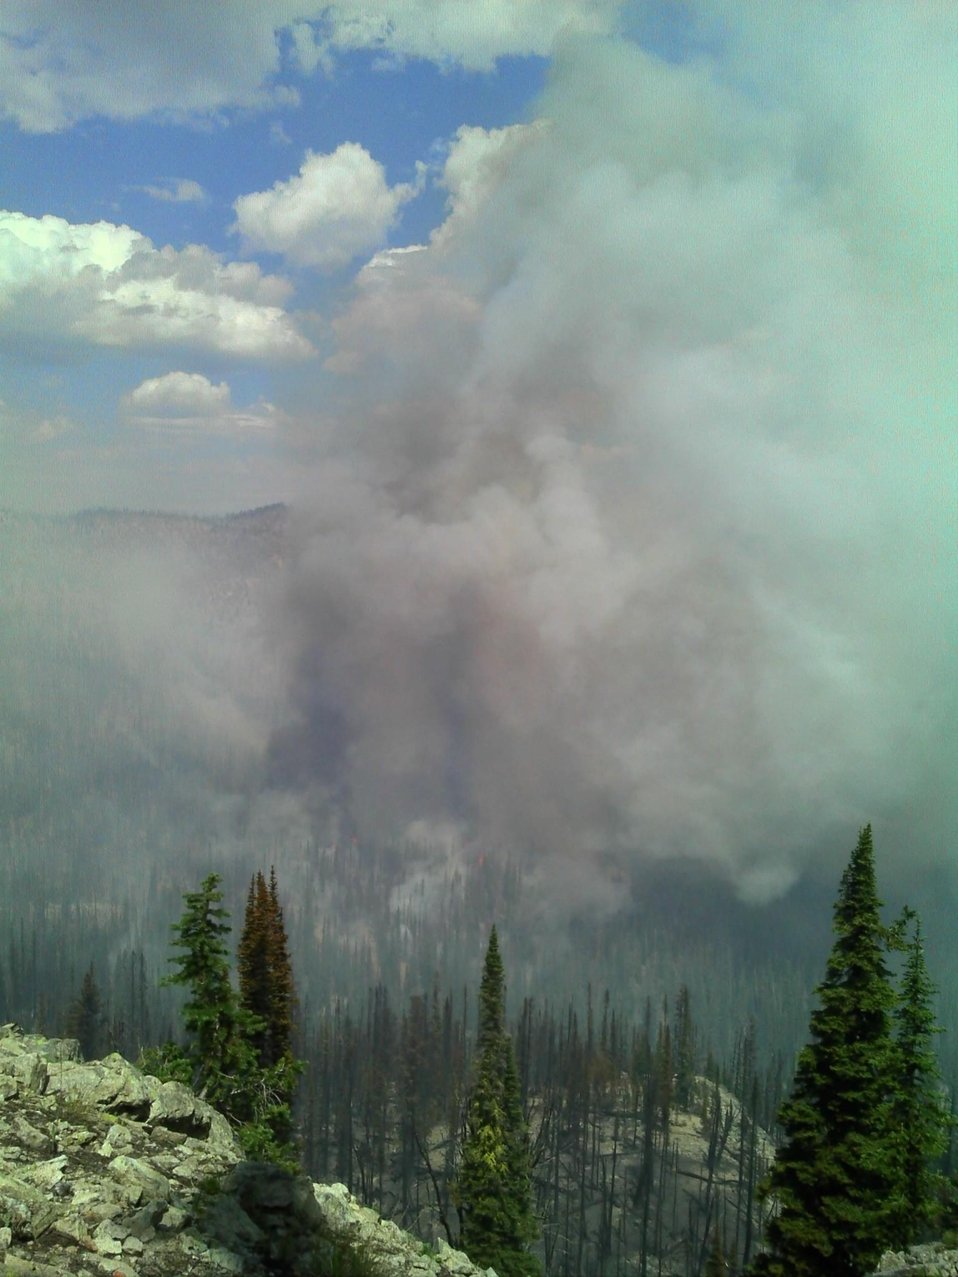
The Thunder City Fire in the Payette National Forest near Stibnite, ID began on Jul. 19, 2013 by lightning and has consumed approximately 1,520 acres and is approximately 15% contained.